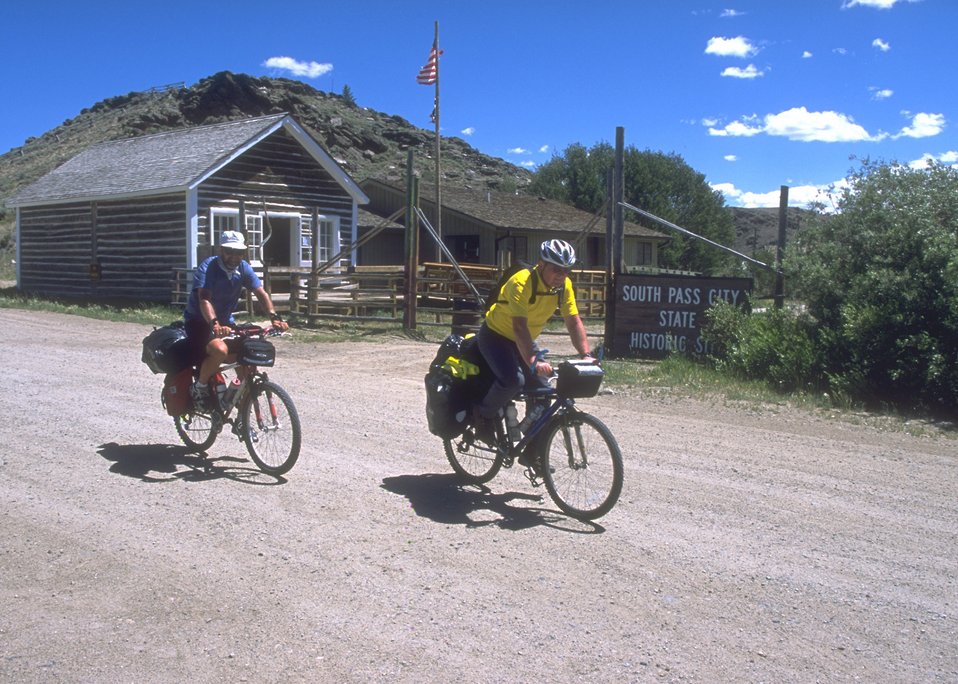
Biking the Continental Divide Trail at South Pass City, Lander Field Office.